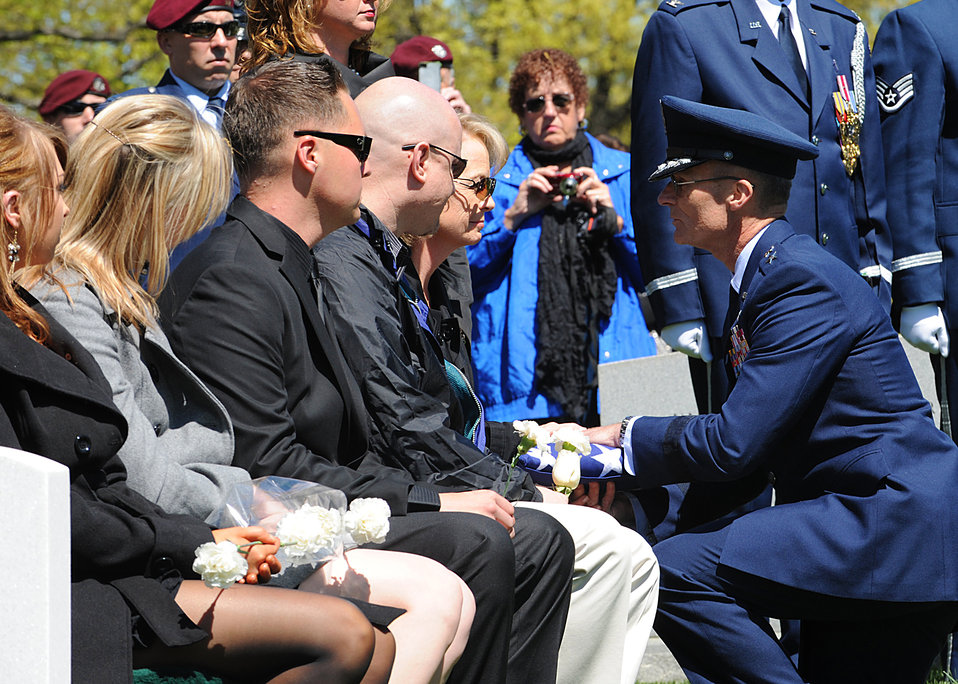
Tech. Sgt. Allen Avery internment

Maj. Gen. Steven Lepper presents the American flag to Debbie McBride at her father, Tech. Sgt. Allen Avery’s burial April 6, 2012, at Arlington National Cemetery in Arlington, Va. Avery was a pararescueman who, along with five others, was killed during a recovery operation in Vietnam on April 6, 1972. Avery's remains were recently identified via new DNA techniques and returned the U.S. He was laid to rest with full military honors along with his fellow crew members who were interred in 1997. Lepper is the Air Force Deputy Judge Advocate General.